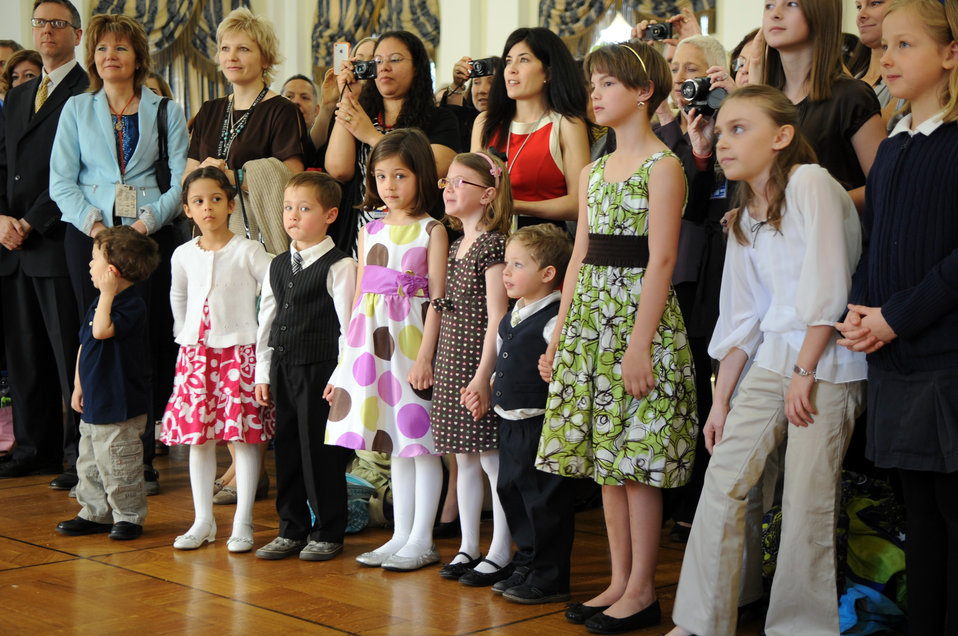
Embassy Moscow Staff and Families Listen to Secretary Kerry

The children of Embassy Moscow staff get a front row view to hear U.S. Secretary of State John Kerry at the U.S. ambassador's residence, the Spaso House, in Moscow, Russia, on May 8, 2013.